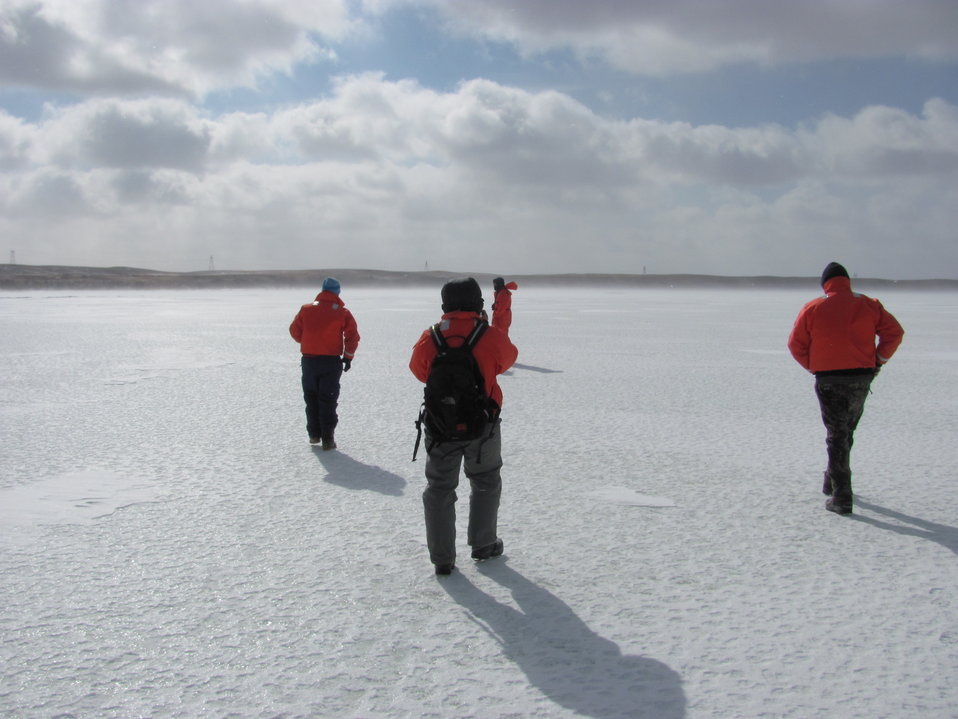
Walking Back from Chase Lake NWR South Island

Chase Lake National Wildlife Refuge has a great working partnership with Northern Prairie Wildlife Research Center (Jamestown, ND).

With the assistance of the NPWRC staff, a lot of research is completed throughout the summer to better understand our bird colonies. This project helps us monitor the heron and egret population through nest tagging.